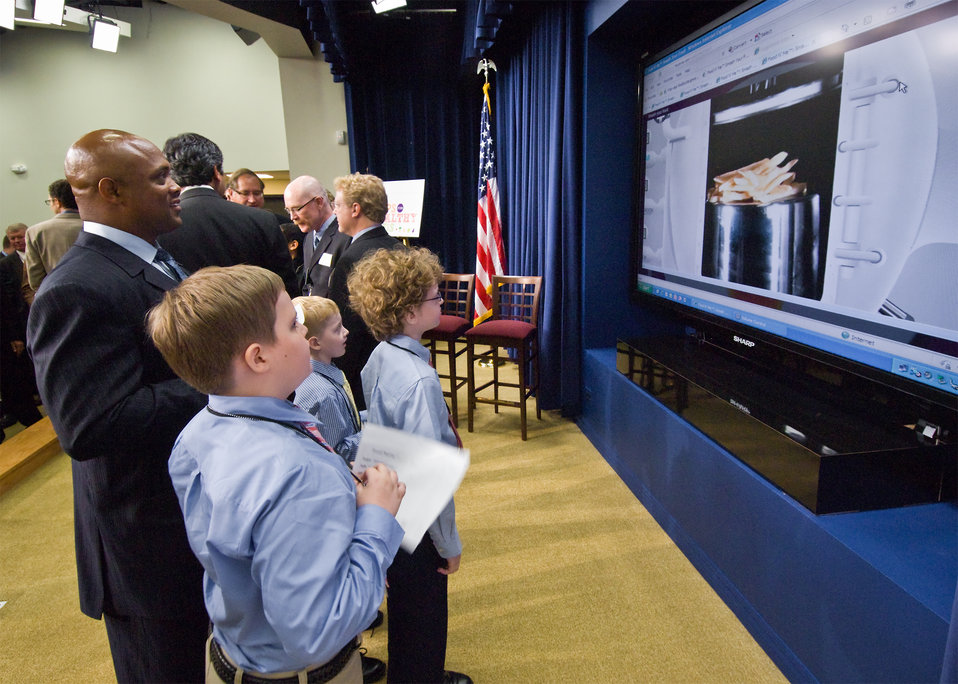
Former Washington Redskins Running Back Brian Mitchell competes against brothers Frederick, Antonio and Joseph Blackwell in the computer game, “Smash Your Food.” “Smash Your Food” is the Third Place winning app in the Apps for Healthy Kids games competition. Smash Your Food,' is a guessing game bursting with realism and surprise. It lets children see and hear foods like a milkshake, or a burger, explode - while learning how much sugar, salt and oil their favorite foods are hiding. Frederick won the game and a replica Pro Bowl helmet signed by Joe Thomas of the Cleveland Browns and Chris Hope of the Tennessee Titans. The Apps for Healthy Kids competition is part of First Lady Michelle Obama’s Let’s Move campaign to end childhood obesity within a generation. The competition challenges software developers, game designers, students and other innovators to develop fun and engaging software tools and games to urge children, especially “tweens” (children ages 9-12) – directly or through their parents – to eat better and be more physically active. The applications are software tools or games for the web, personal computer, mobile handheld device, console or any software platform available to the public. The winners were honored at the White House, in Washington, DC, on Wednesday, September 29, 2010. USDA Photo 10di15067-21 by Bob Nichols.